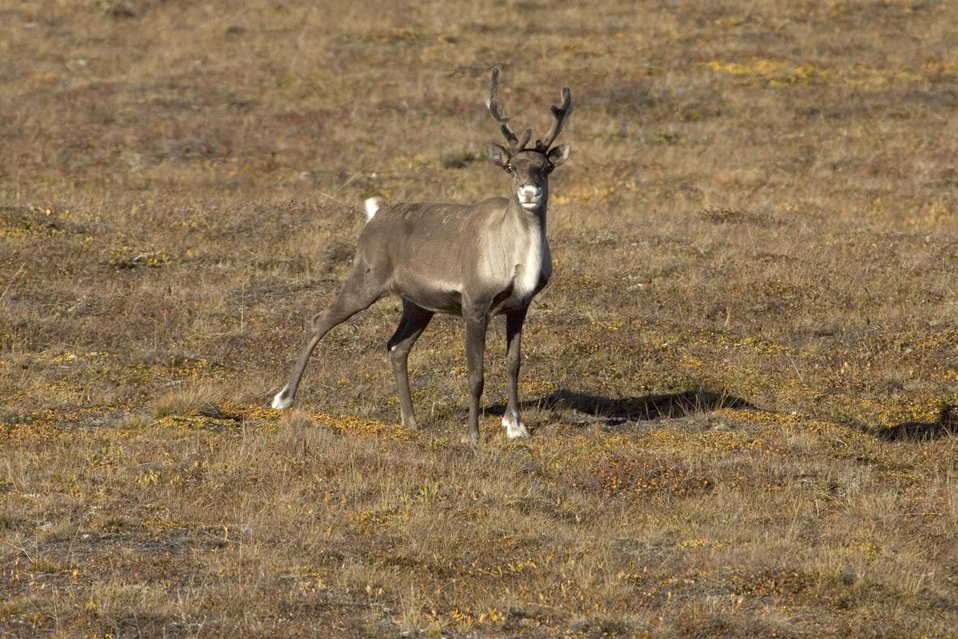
Arctic National Wildlife Refuge